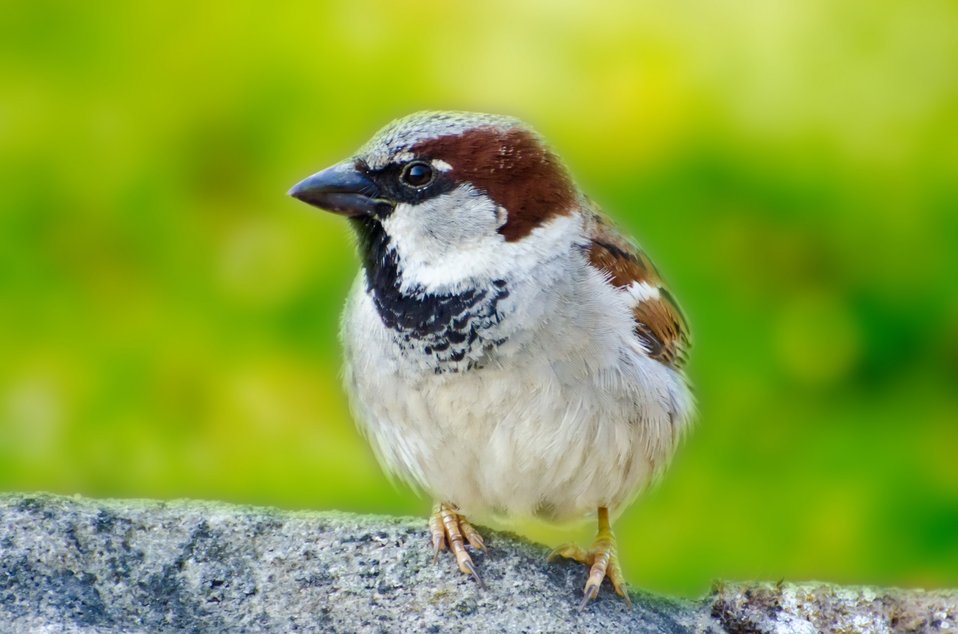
Bird - animals.